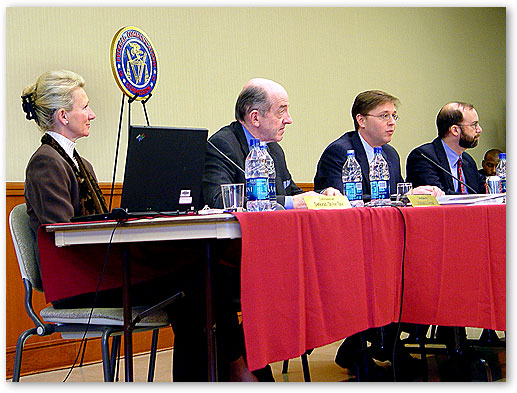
FCC Commissioners at February Open Commission Meeting, Keller, Texas.